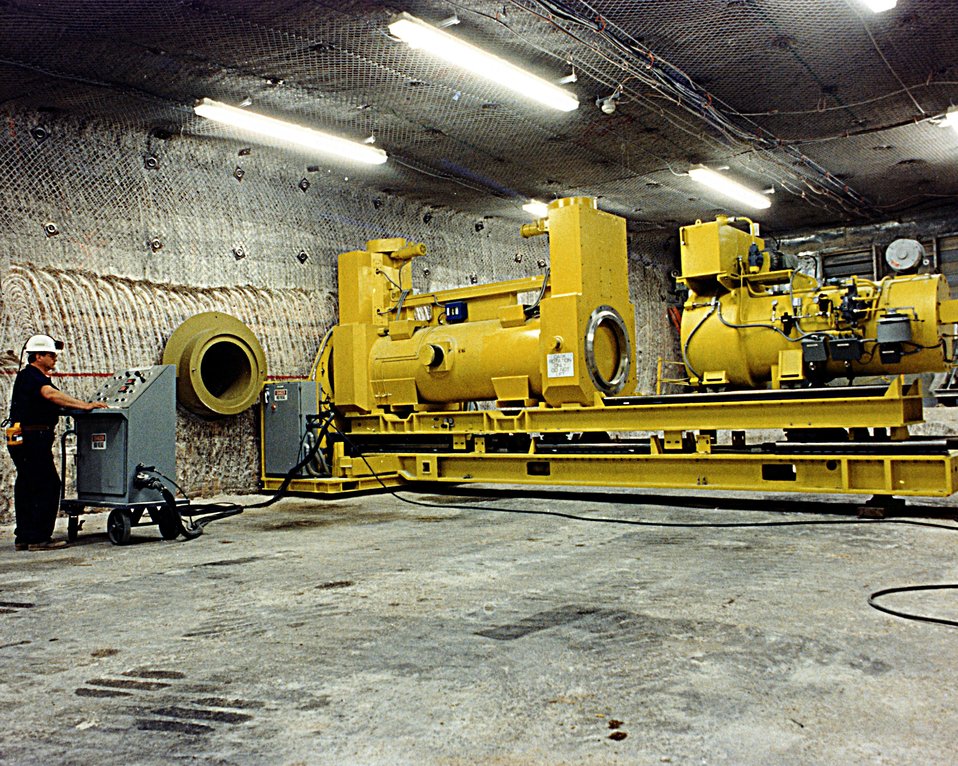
REMOTE HANDLING HORIZONTAL EMPLACEMENT MACHINE.

THE WASTE ISOLATION PILOT PLANT IS A DOE RESEARCH AND DEVELOPMENT FACILITY FOR DEMONSTRATING THE SAFE DISPOSAL OF TRANSURANIC RADIOACTIVE WASTES. TEST SHAFTS HAVE BEEN DRILLED TO A DEPTH OF 2,100 FEET. THE SHAFTS, ONE 6 FEET IN DIAMETER AND THE OTHER 12 FEET IN DIAMETER, PROVIDE AN ENTRY PASSAGE AND VENTILATION TO THE UNDERGROUND SALT ROCK FORMATION THAT IS BEING TESTED TO DETERMINE ITS SUITABILITY FOR RADIOACTIVE WASTE STORAGE.